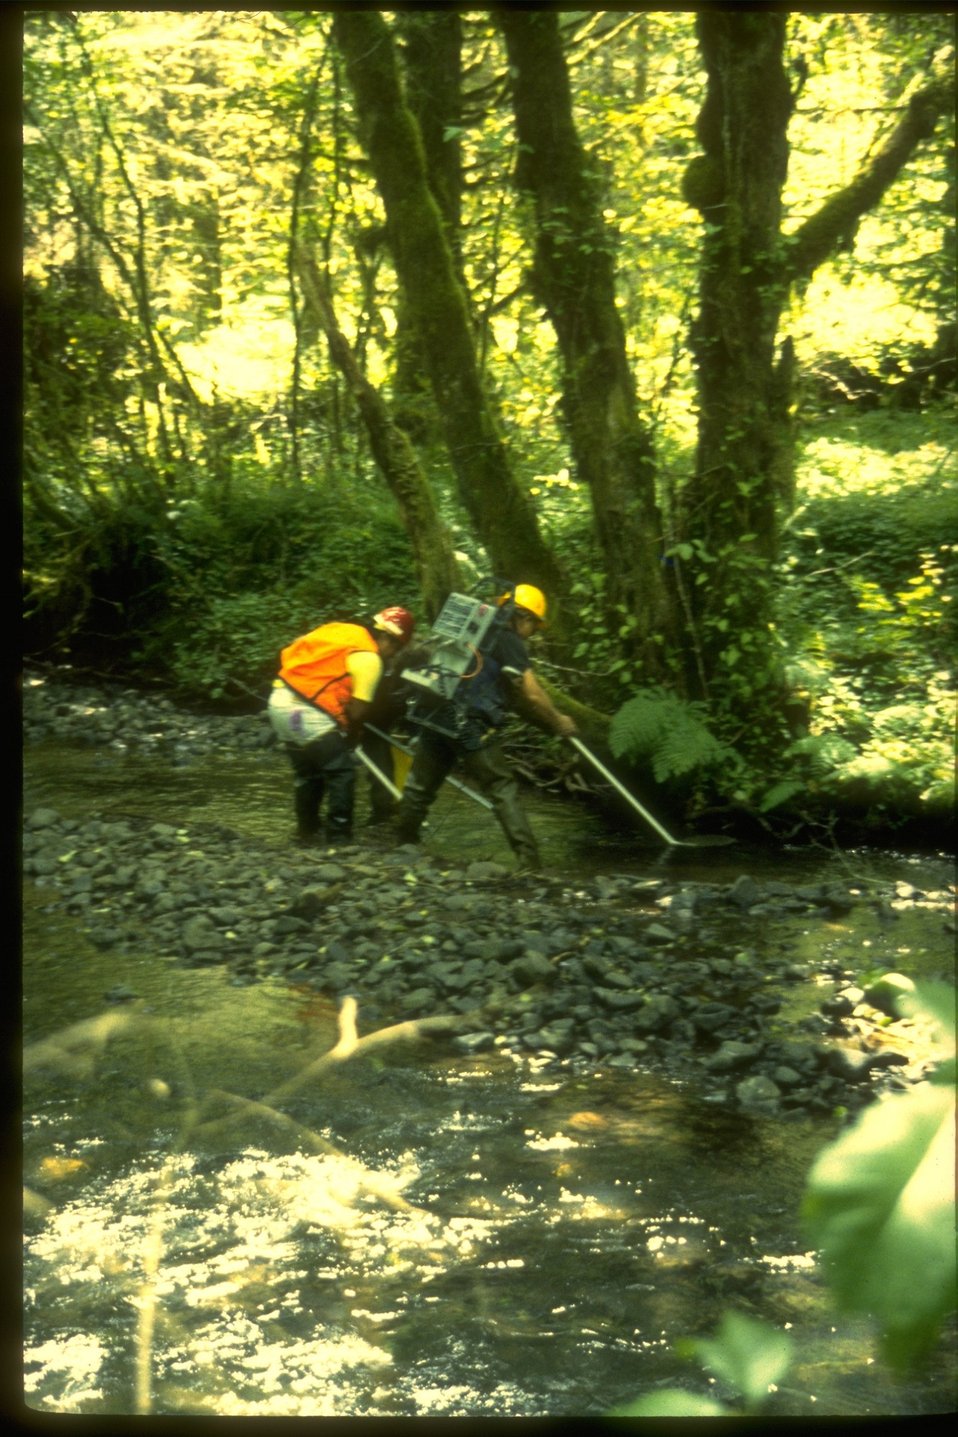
Fish biologist electro-shocks fish.